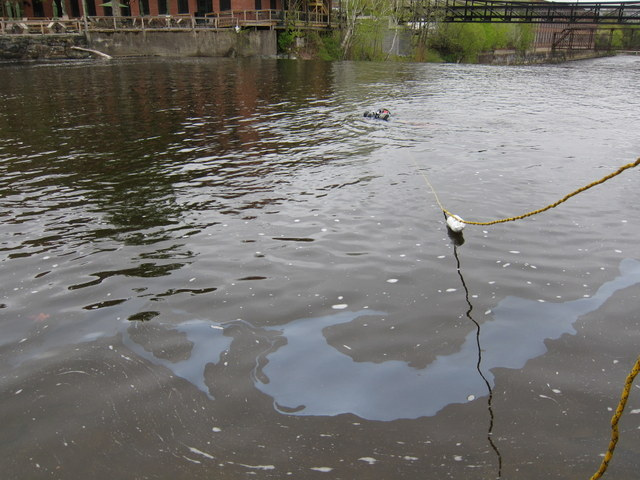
May 2012, Divers help investigate potential cleanup needs in Claremont, NH

This oil sheen on the water surface was nearby to a Manufactured Gas Plant in Claremont, NH.

Divers helped to sample the bottom sediment and water quality to help determine whether or not additional cleanup actions are warranted.

Environmental Response Team (ERT) divers were supporting the Superfund cleanup program by installing miniature wells to characterize shallow discharging groundwater.

The underwater view, although murky, is extremely helpful when EPA is trying to determine the extent of the contamination and possible cleanup impacts for this and other bodies of water throughout the U.S.